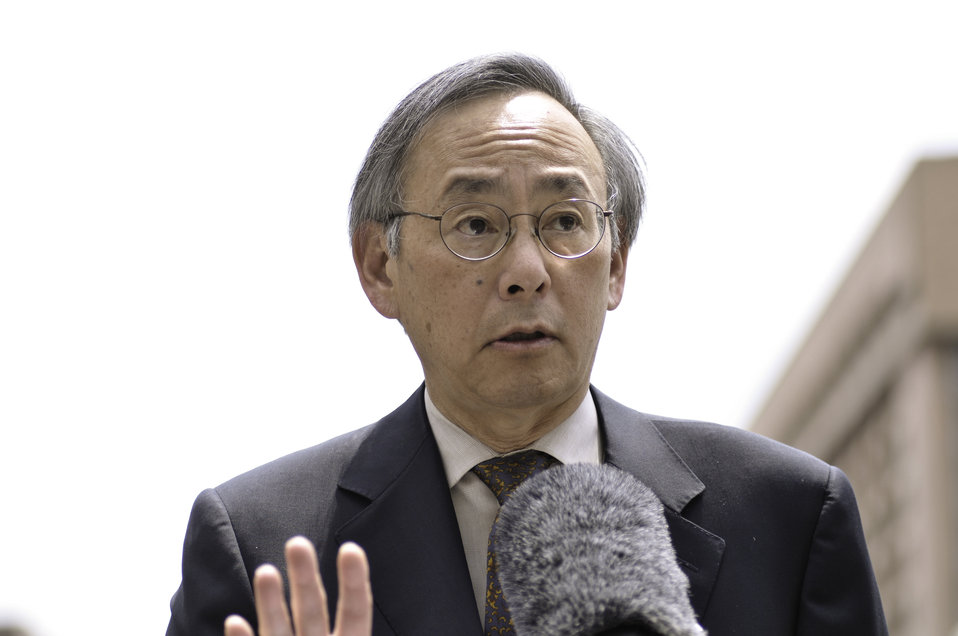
Clean Fleets Announcement 7 of 14

Sec. Steven Chu, US Department of Energy speaks at a Clean Fleets event held at the Department of Energy.